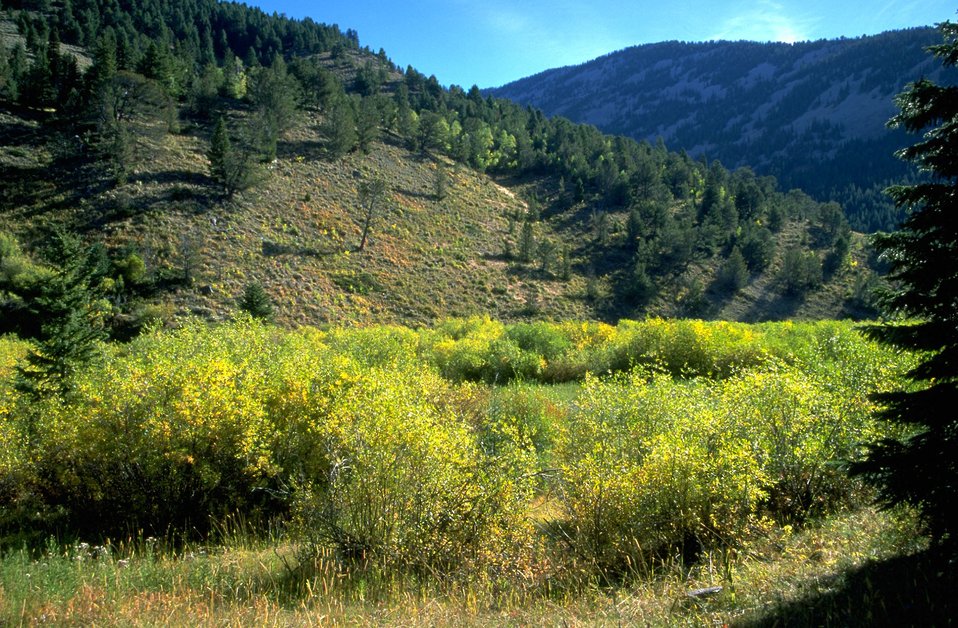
Willow bottom with mountains in the background